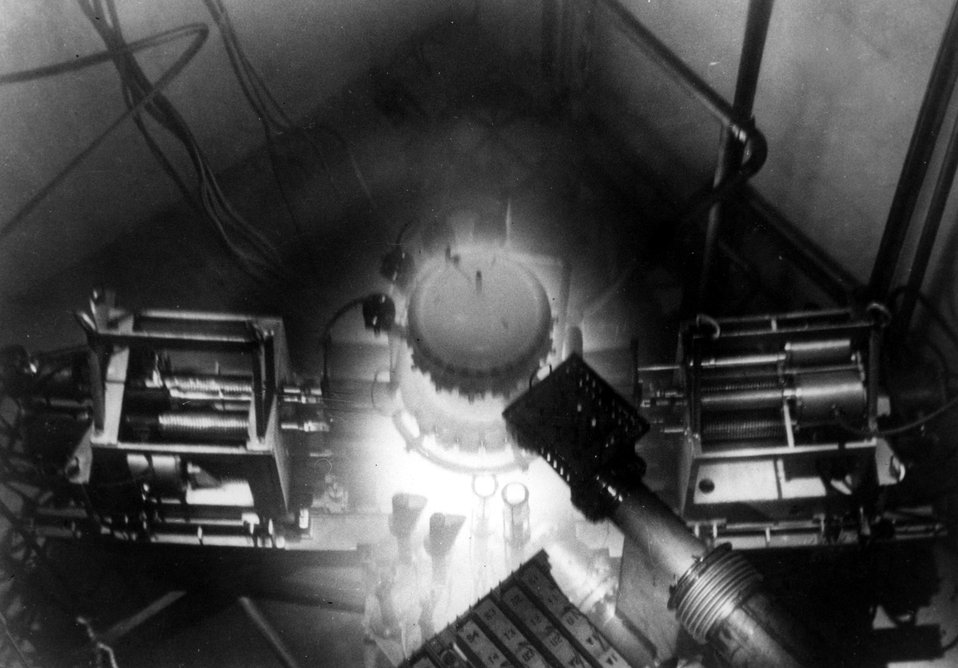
The Gas Cooled Reactor Experiment (GCRE) operating at full power of two thermal mega-watts at the Commission's National Reactor Testing Station in Idaho. Circa 1962.